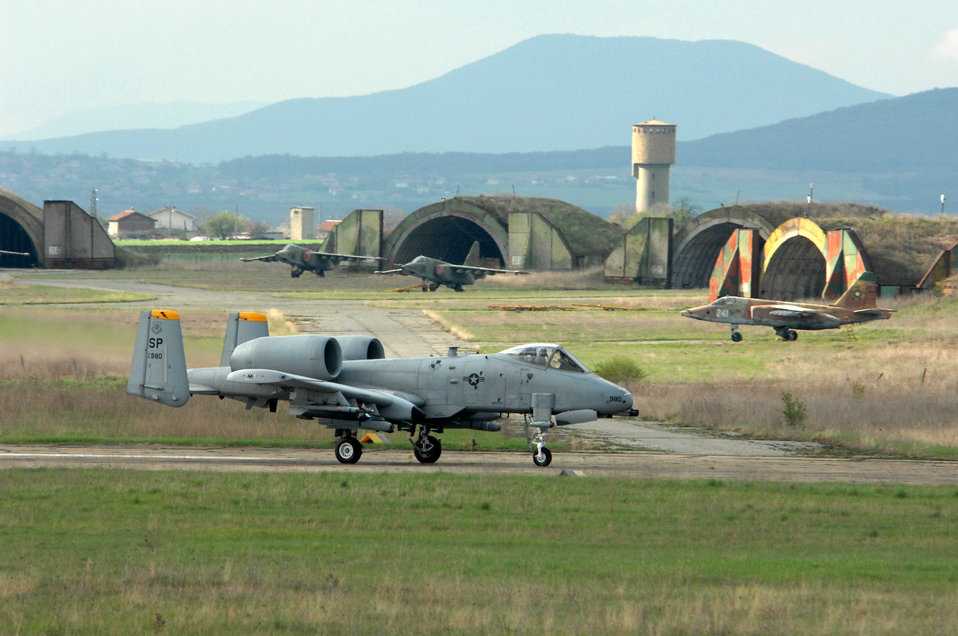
A-10 pilots take to Bulgarian skies during joint exercise

An A-10 Thunderbolt II taxis down the runway to take off on a training mission April 15 with Bulgarian SU-25s parked in the background at Bezmer Air Base, Bulgaria. The A-10s from the 81st Fighter Squadron at Spangdahlem Air Base, Germany, deployed here to support a U.S. and Bulgarian air forces joint training exercise.